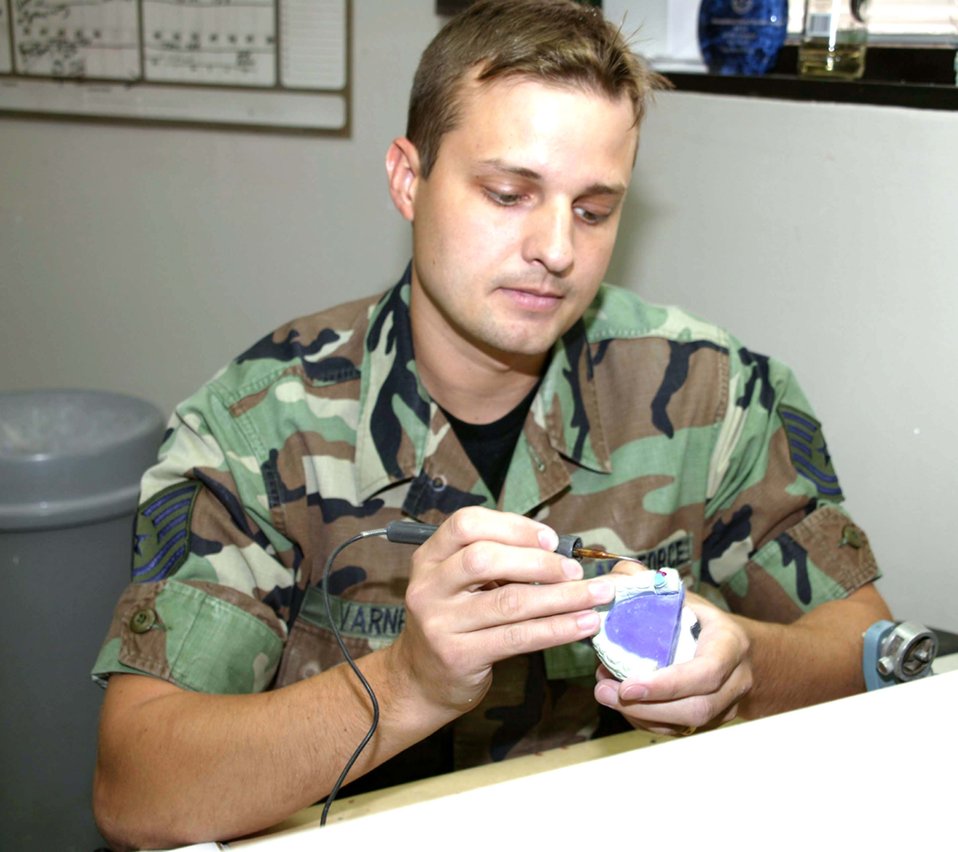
SHAW AIR FORCE BASE, S.C. -- Tech Sgt. Jerry Varner waxes a full gold crown at the dental clinic here. He is a dental lab craftsman with the 20th Aeromedical-Dental Squadron.